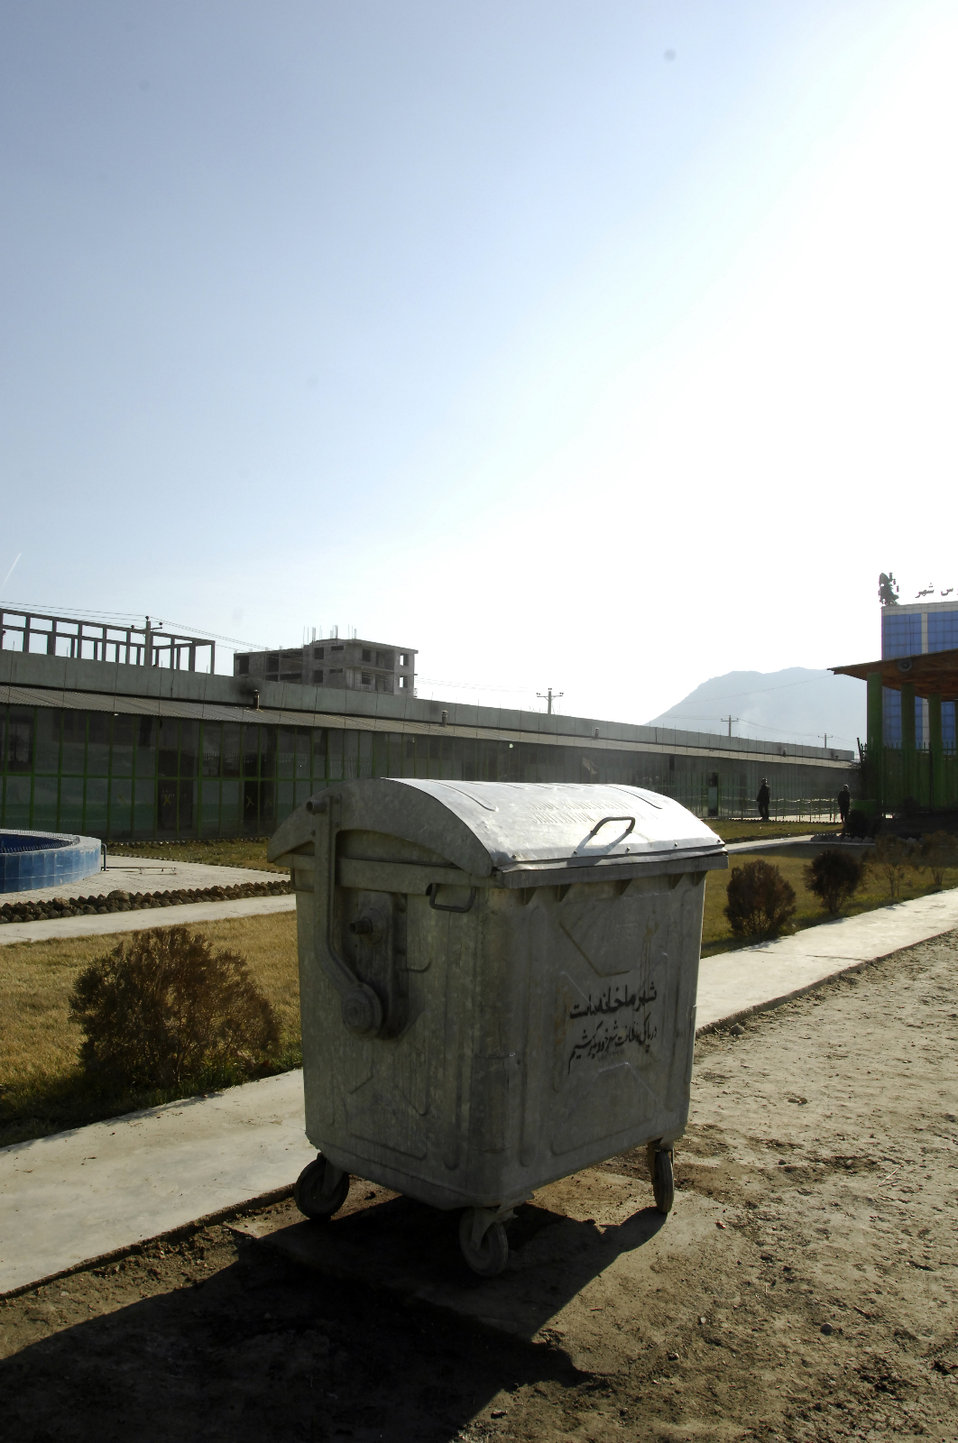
Care65